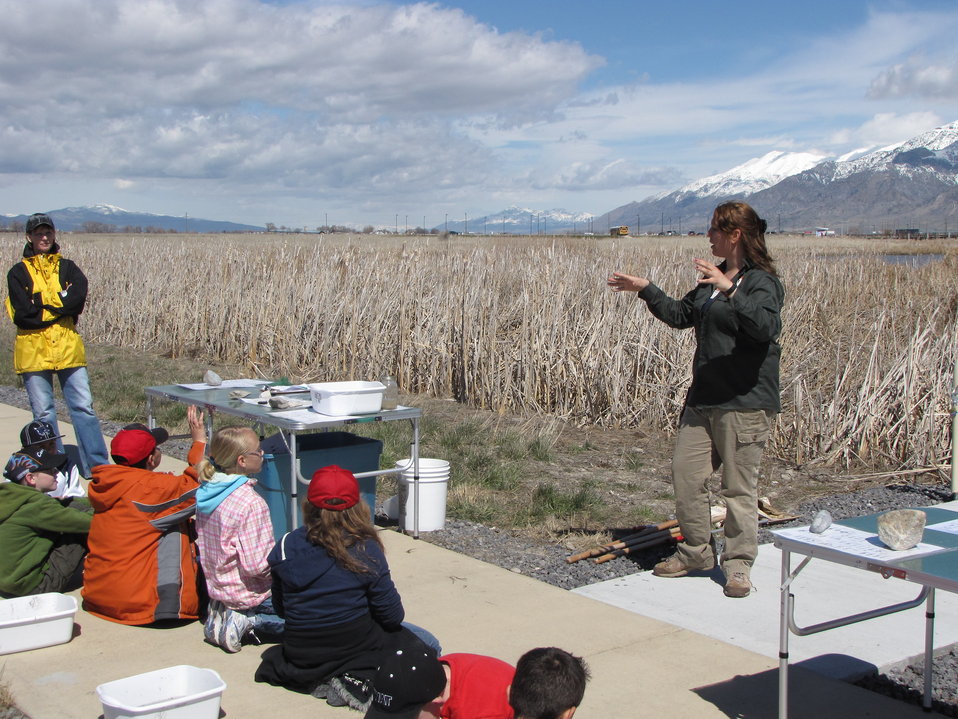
Learning About Macroinvertebrates

Volunteer Intern Allison teaches the students visiting for a field trip about macroinvertebrates and how they can be great indicators of wetland water quality and health at Bear River Migratory Bird Refuge in Utah.